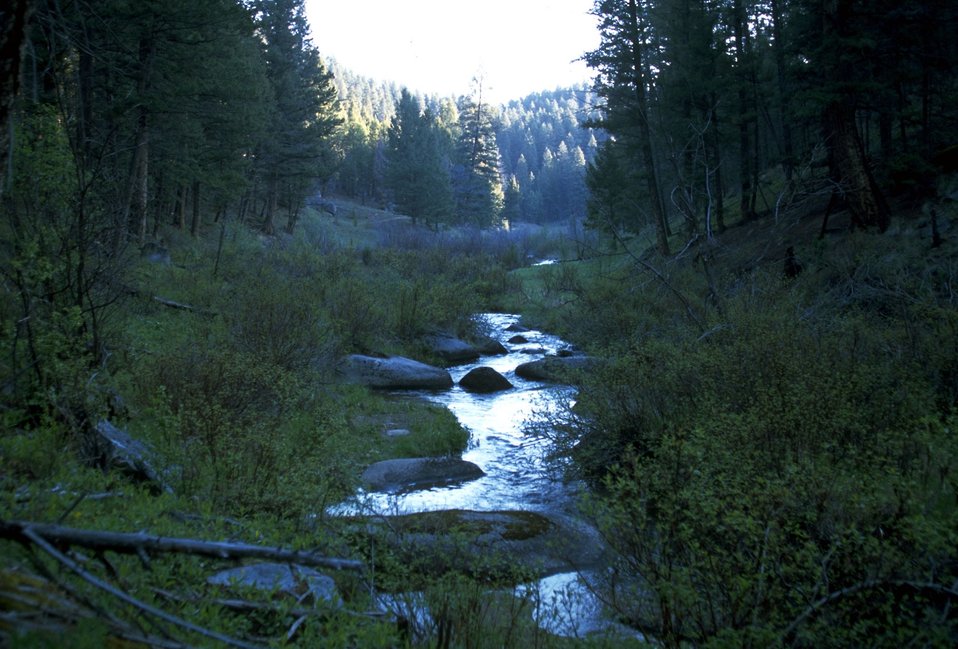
Moose Creek flowing between the trees